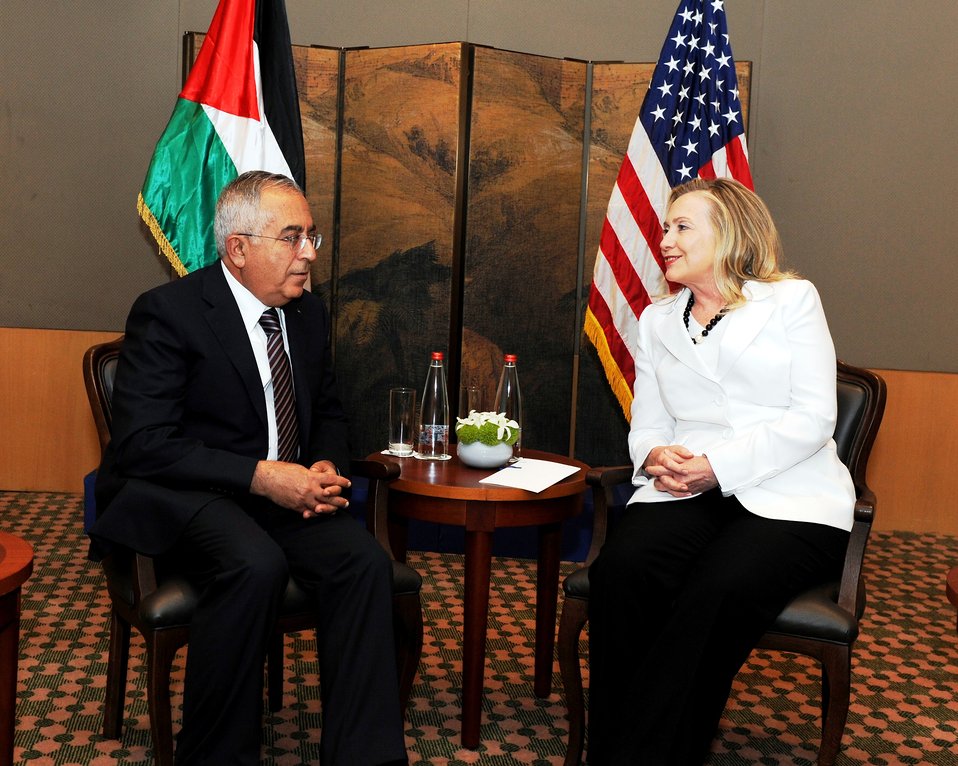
Secretary Clinton Meets With Prime Minister Fayyad of the Palestinian National Authority

U.S. Secretary of State Hillary Rodham Clinton meets with Prime Minister Salam Fayyad of the Palestinian National Authority in Jerusalem on July 16, 2012.